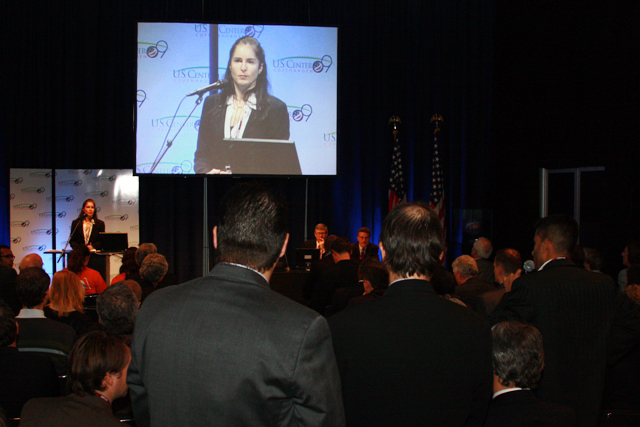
U.S. Department of Interior Panel Presentation, “Mitigating Climate Change: Capturing Carbon Underground, in Soil, and in Plants” at COP-15

U.S. Department of Interior panel presentation, “Mitigating Climate Change: Capturing Carbon Underground, in Soil, and in Plants” during COP15 (Conference of the Parties to the UN Framework Convention on Climate Change) in Copenhagen, Denmark December 10, 2009.